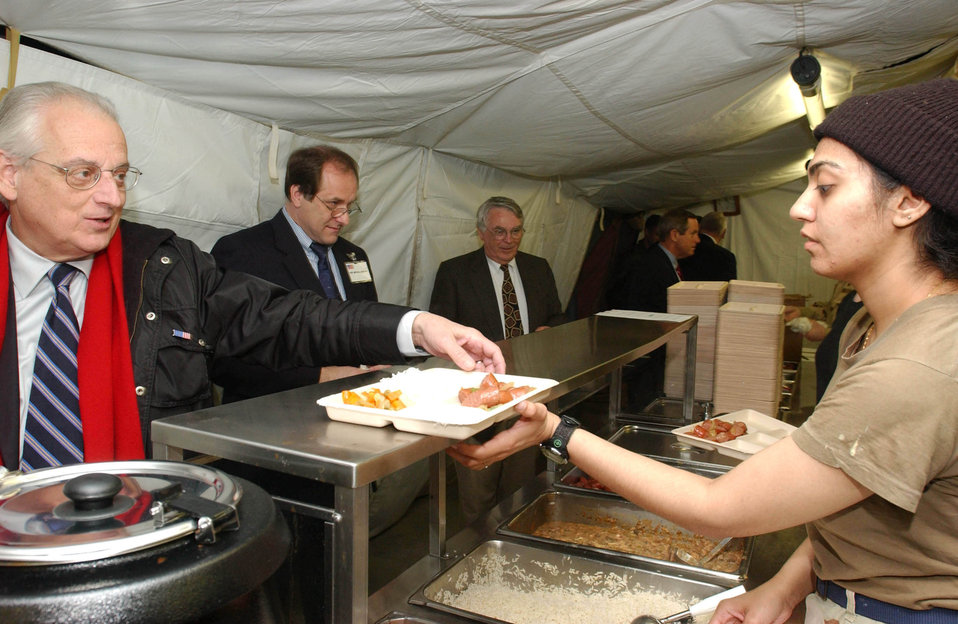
Congressional delegation visits deployed airmen

OPERATION ENDURING FREEDOM -- Airman 1st Class Erum Tariq, from the 376th Expeditionary Services Squadron, serves lunch to Reps. William Pascrell Jr., D-N.J.; Michael Capuano, D-Mass.; Terry Everett, R-Ala.; and Joe Wilson, R-S.C., during a congressional delegation visit Feb. 15 to Ganci Air Base, Kyrgyzstan.